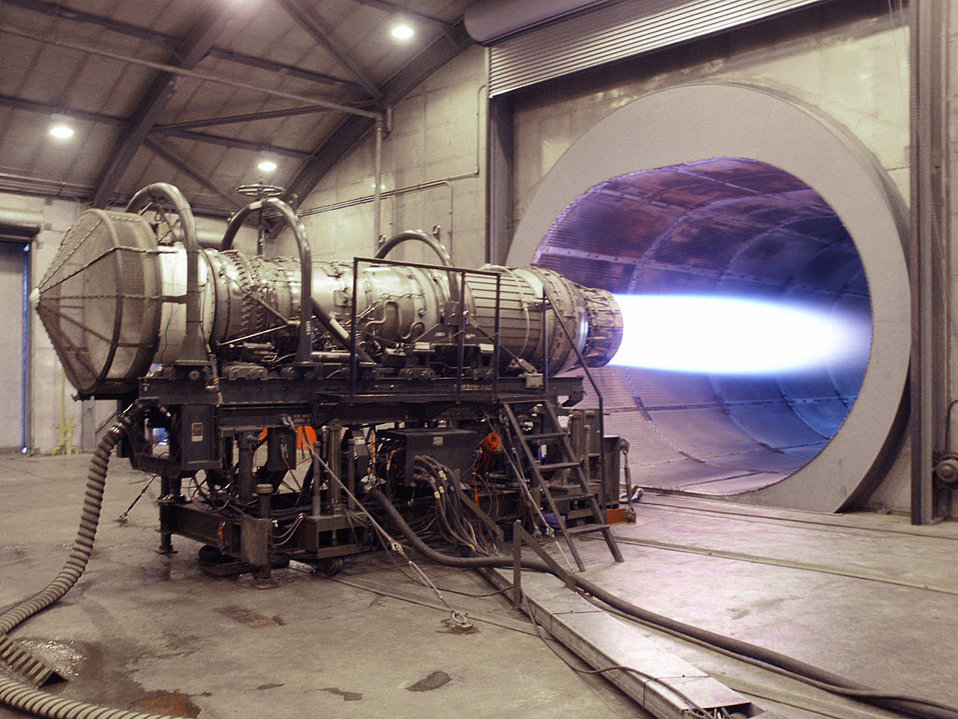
Full power

EGLIN AIR FORCE BASE, Fla. (AFPN) -- An F100-PW-100 engine runs at full afterburner in the 33rd Maintenance Squadron's test cell here. The engine, for an F-15 Eagle, passed all tests and became a milestone for the propulsion flight as the 40th spare war-ready engine. Of the 167 total engines the 33rd Fighter Wing has, 59 are earmarked as spares.